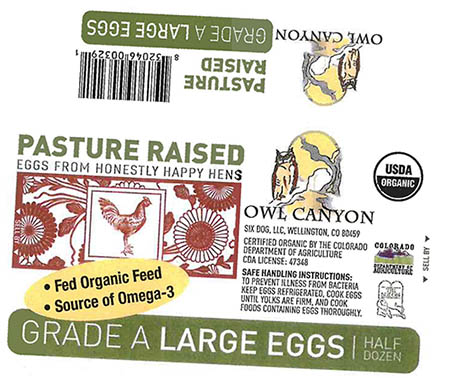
RECALLED – Eggs

May 1, 2014 – Product Recall – Sixdog Investments Voluntarily Recalls Eggs Because of Possible Health Risk.